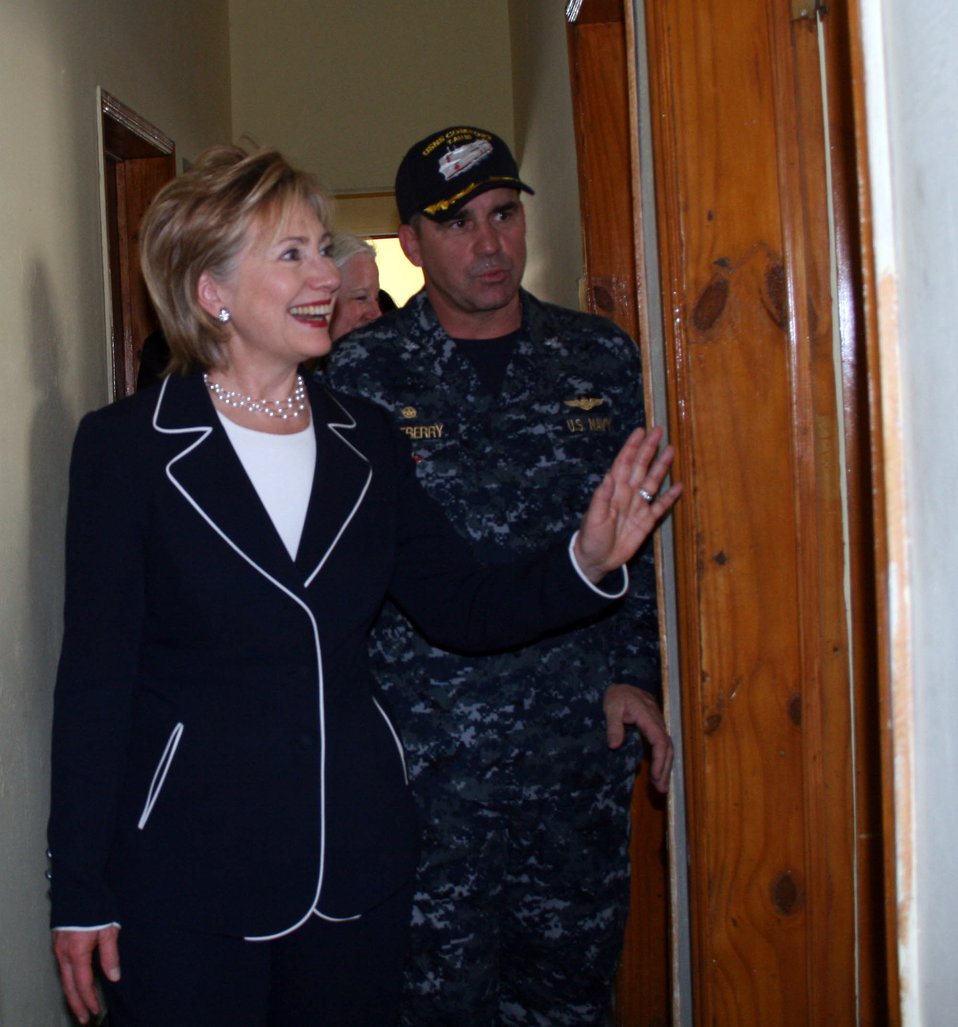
Secretary Clinton Visits Clinic in Haiti

U.S. Secretary of State Hillary Rodham Clinton and Commodore Robert Lineberry, Mission Commander for Continuing Promise 2009, take a look into the radiology room at the Comfort Clinic in Cite Soleil, Haiti April 16, 2009.